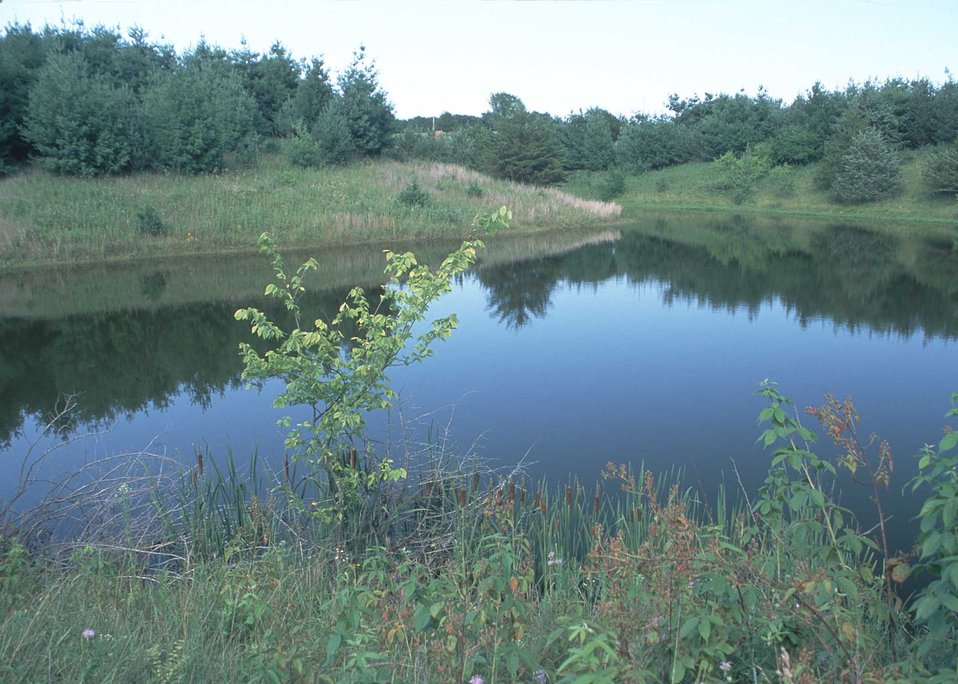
A well-designed farm pond with surrounding wildlife habitat in rural Van Buren County, Iowa.